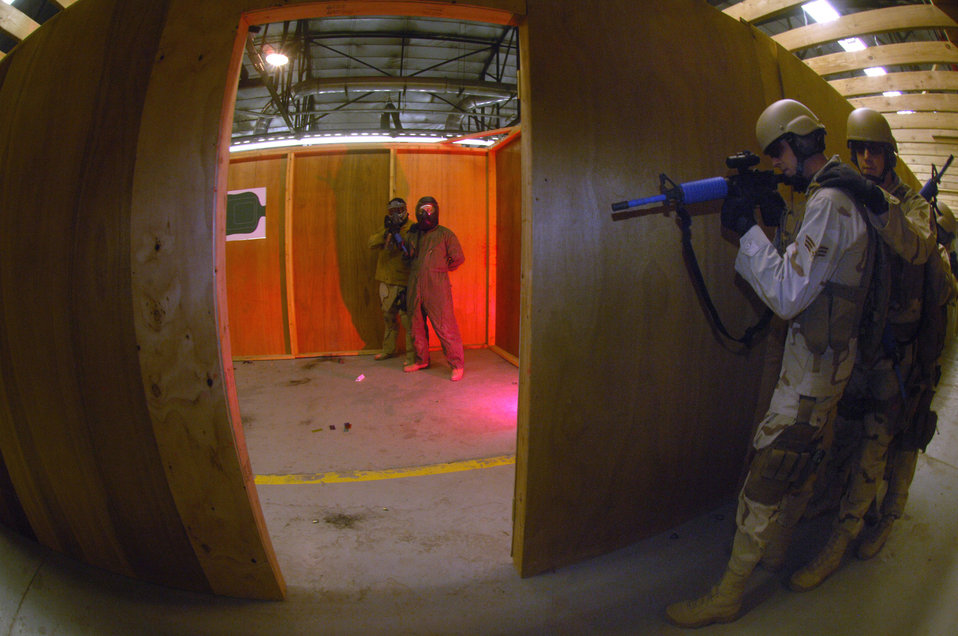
Security forces train Airmen to protect space resources

Airmen of the 90th Ground Training Squadron prepare to enter a room with a hostage situation in place Feb. 8 at Camp Guernsey, Wyo. Camp Guernsey is an Army Reserve training ground used by the 90th Space Wing for convoy security, sniper training and close quarters combat training including other specialty training.